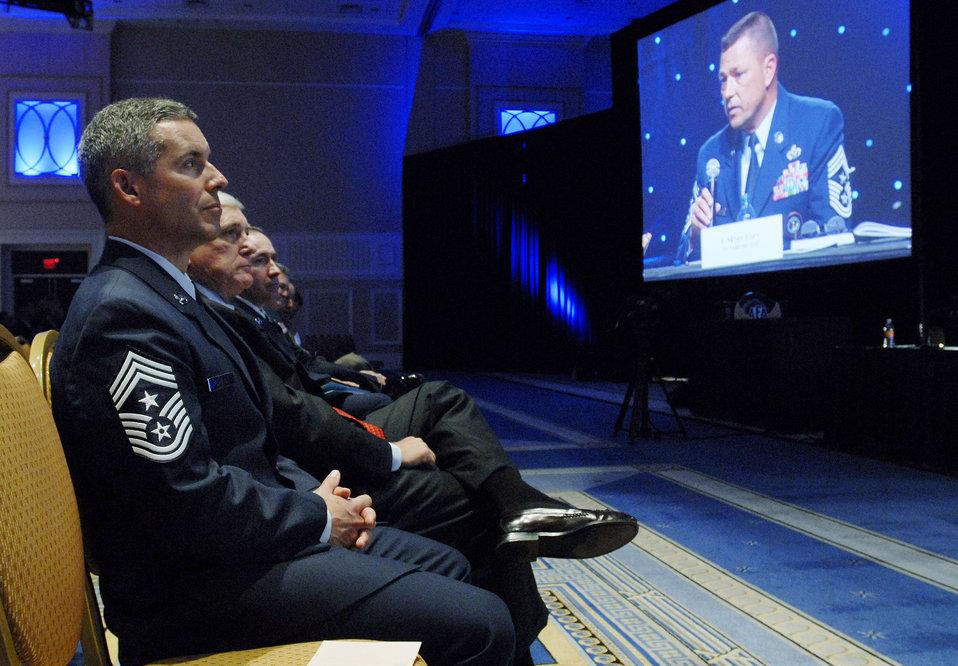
Senior Air Force enlisted officials address Airmen's concerns

Chief Master Sgt. David Spector listens as Chief Master Sgt. W. Allen Usry, NORAD command chief, addresses conference attendees at the 2009 Air Force Association Air & Space Conference and Technology Exposition Sept. 15, 2009, in Washington, D.C. During the event the command chief panel discussed